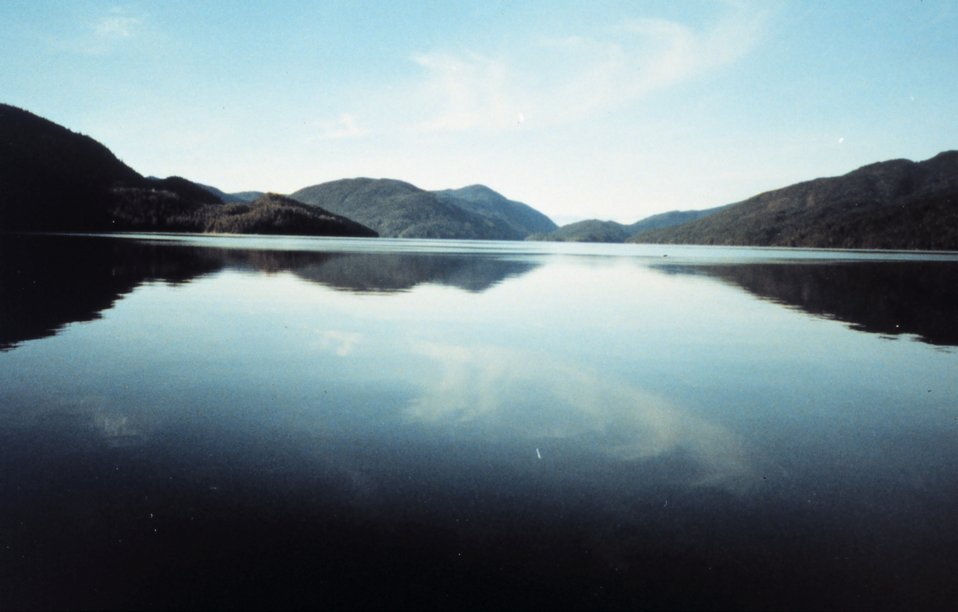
Boca de Quadra - cirrus clouds reflecting on still waters